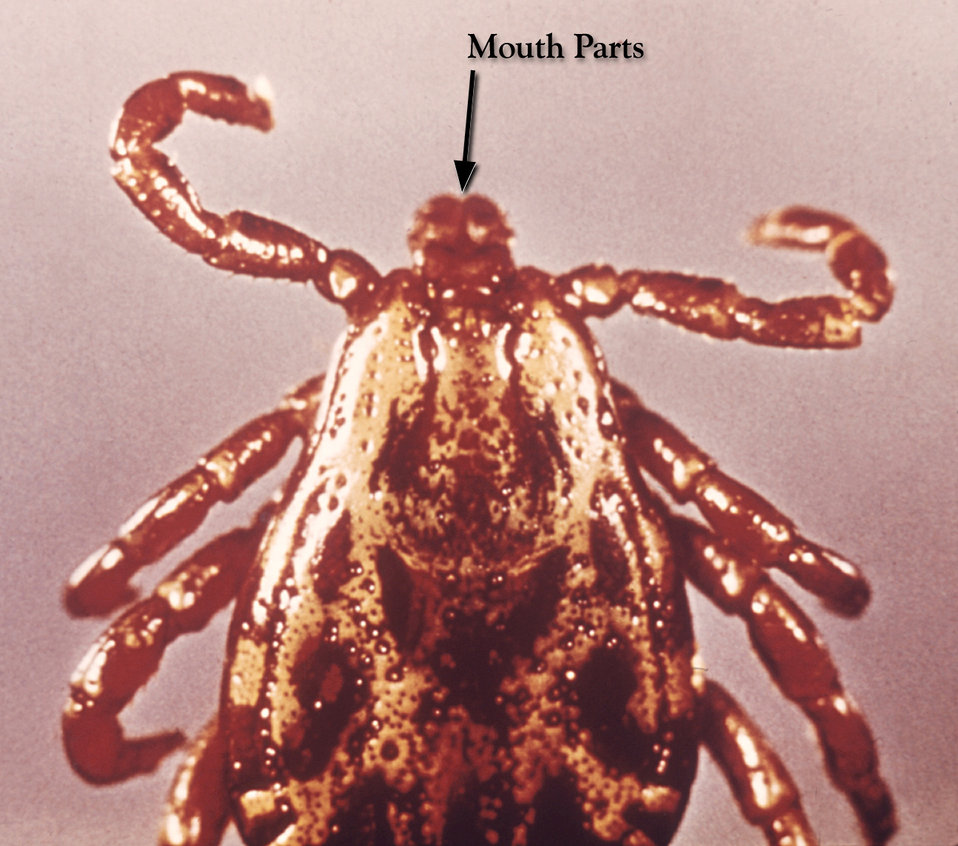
This is a member of the Ixodidae family of 'hard ticks', a North American tick with it anteriorly projecting mouth parts.